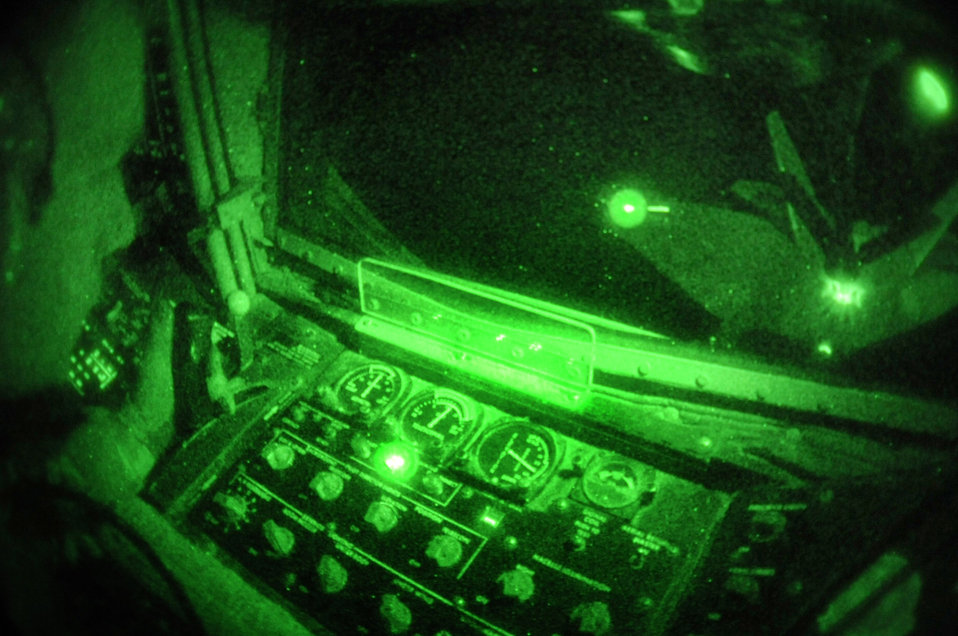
Night operations at Red Flag

Staff Sgt. Jeremy Welch directs the boom to refuel an aircraft Feb. 3 during a Red Flag exercise at Nellis Air Force Base, Nev. Red Flag is a multi-national exercise providing a realistic environment to practice combat scenarios. The experience gained during the exercise is vital to the survival of air crews in combat. Sergeant Welch is a boom operator with the 905th Air Refueling Squadron at Grand Forks AFB, N.D.